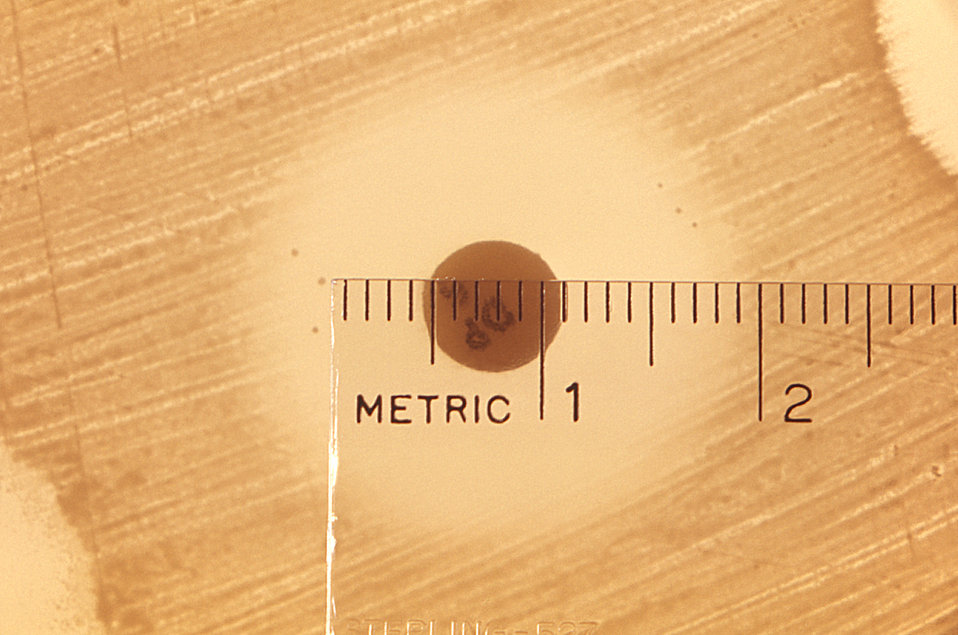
This 1972 image depicted a Mueller-Hinton agar culture plate that had been used in an antibiotic susceptibility test (AST). Known as the Kirby-Bauer method, each of the small labeled discs, or wafers, contained an antibiotic cocktail. The light halos surrounding each disc, also known as 'reaction zones', represented regions in which the bacteria on the agar's surface did not thrive, due to their sensitivity to the antibiotic that had been soaked into these respective discs. This image is an enlarged view of a section of PHIL 10785.